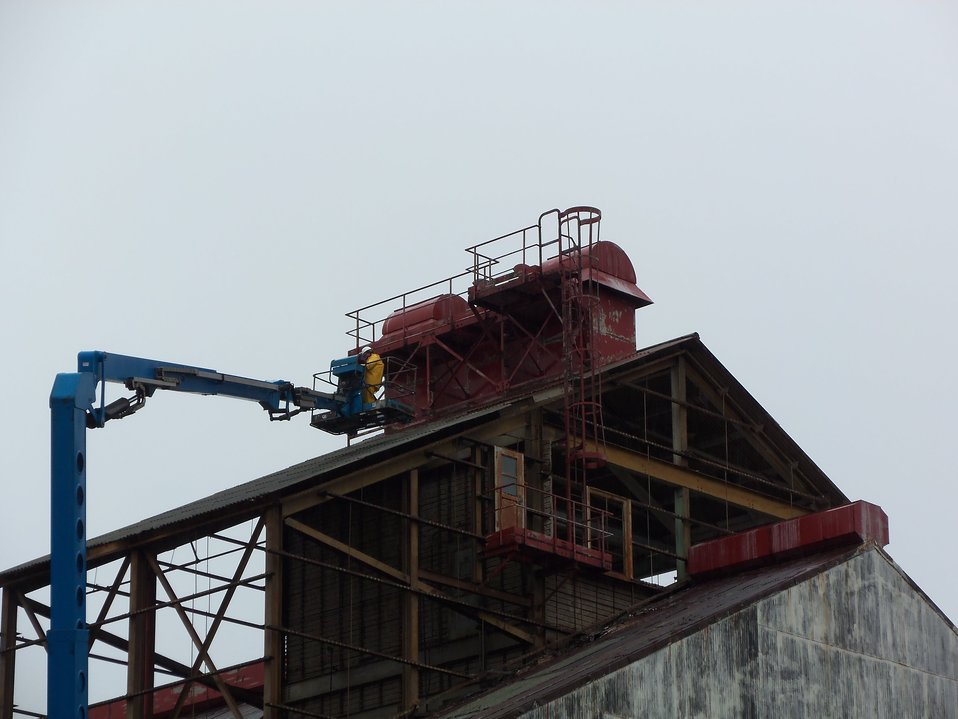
WORKERS ON ROOF OF BUILDING 401

Activities from the Niagara Falls Storage Site, which is associated with the former Lake Ontario Ordnance Works. Formerly Utilized Sites Remedial Action Program (FUSRAP), a program initiated in 1974 to identify, investigate and clean up or control sites that were part of the Nation's early atomic energy and weapons program. Activities at the sites that are eligible for FUSRAP were conducted by Manhattan Engineer District (MED) or the Atomic Energy Commission (AEC), both predecessors of the Department of Energy (DOE). The U.S. Army Corps of Engineers was assigned management of FUSRAP by Congress in 1997.